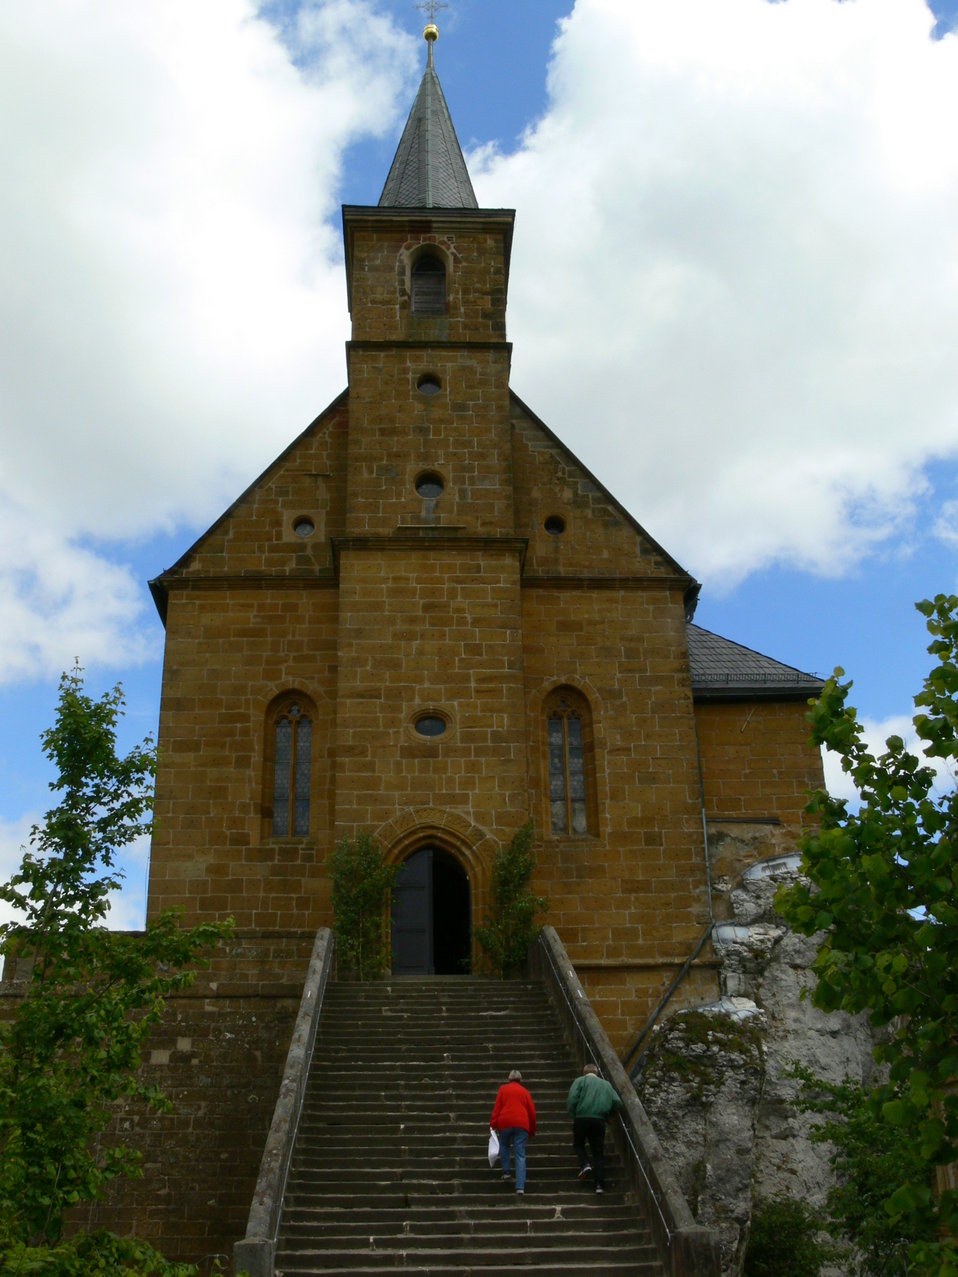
108 Gügel, Treppenaufgang